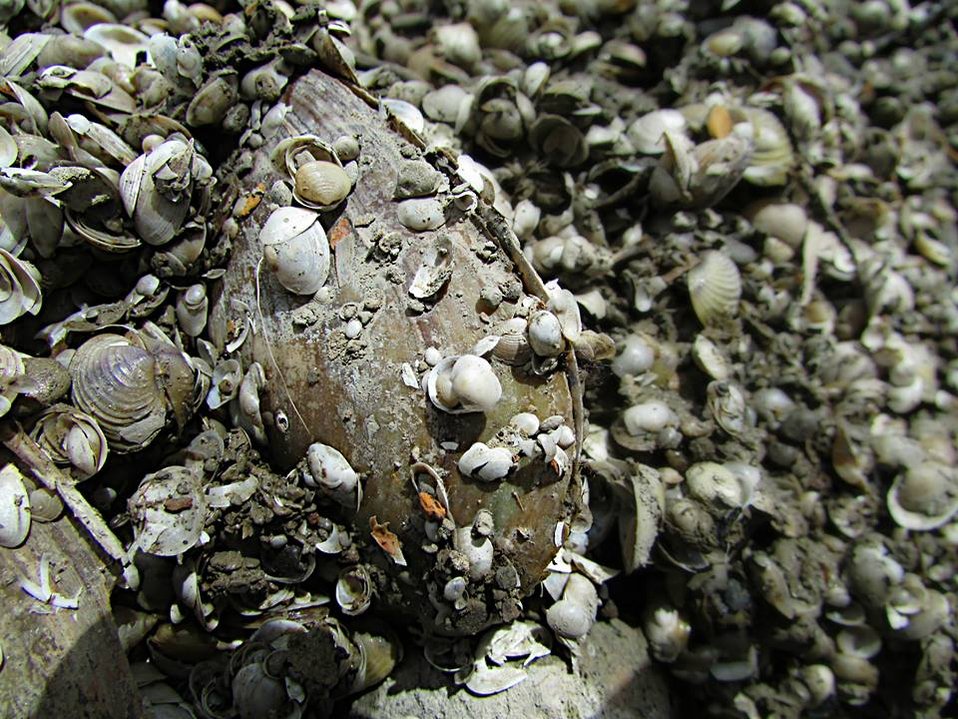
Invaders

Simple filters help keep our ponds clean. These pond socks need to be removed at the end of every summer and are usually full of unwanted creatures.